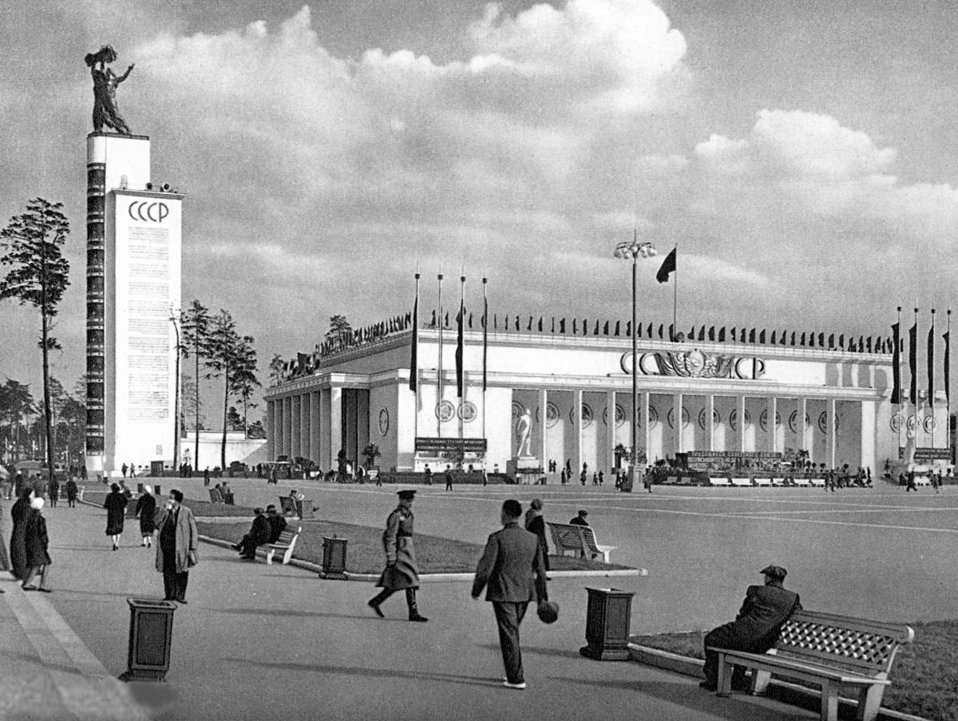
Русский: тут теперь площадь между фонтанами ' Дружба народов СССР ' и ' Каменный цветок '